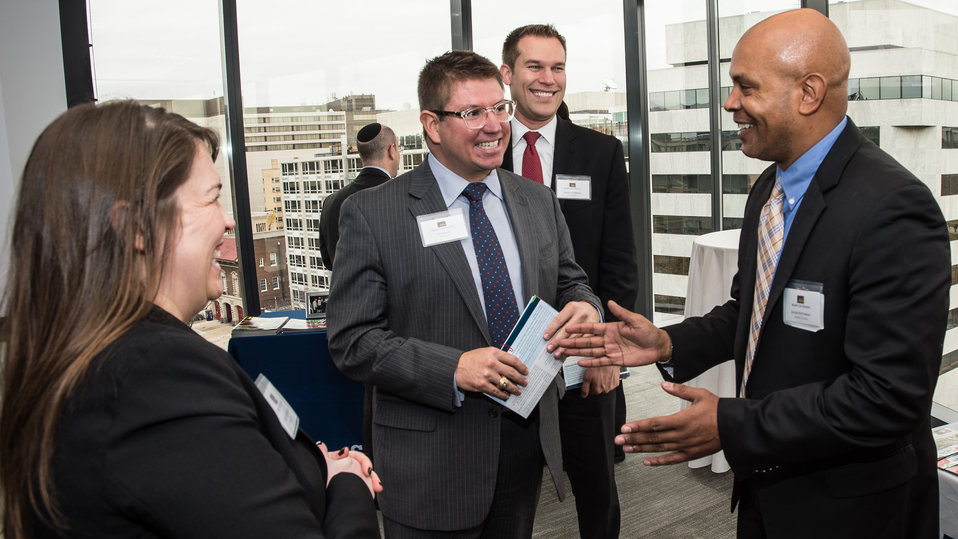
Martha’s Table’s Jacque Patterson (right) speaks with Walmart’s Tres Bailey (grey suit) shortly before the start of the Share the Season event organized by the U.S. Department of State Office of the Chief of Protocol Diplomatic Partnership Division at the Business Roundtable (BRT) in Washington, D.C. on Thursday, Nov. 21, 2013. BRT is a non-profit association of chief executive officers of leading U.S. companies that encourages embassies and diplomats to be active in local community service projects.